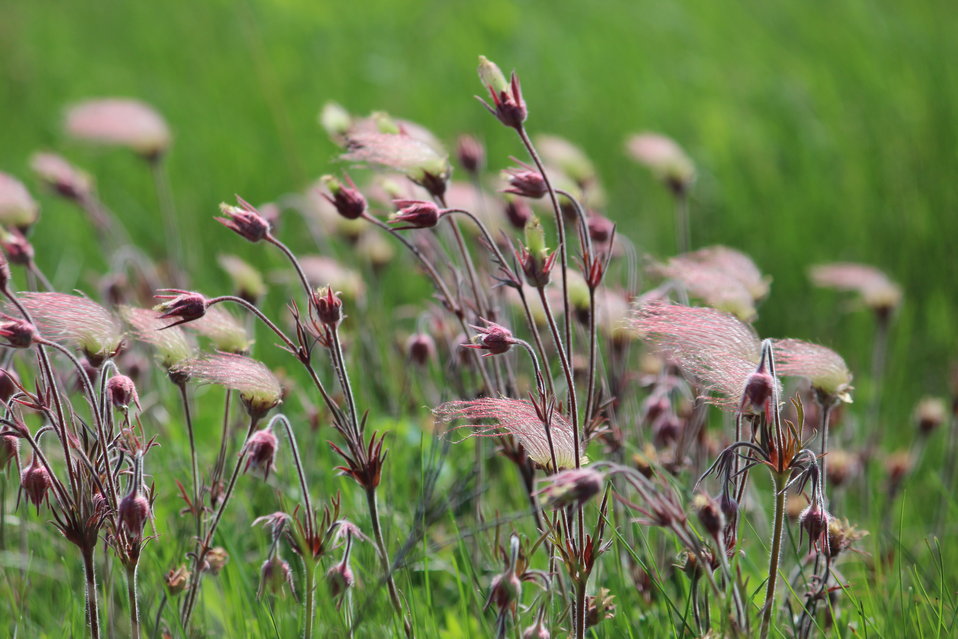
Prairie Smoke is a perennial native wildflower found on high-quality native prairie sites. After pollination, the down-turned flower becomes upright and seeds wave the feathery plumes that give this plant its common name.
These beautiful flowers were photographed on the Cornell WPA in LaMoure County, North Dakota.